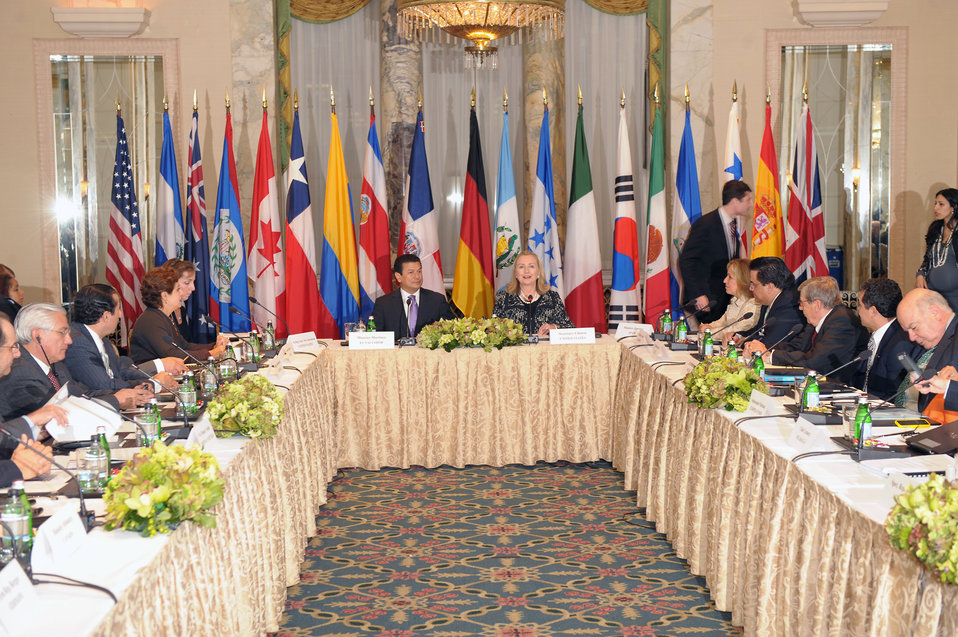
Secretary Clinton Participates in a Meeting of Friends of Central America

U.S. Secretary of State Hillary Rodham Clinton participates in a meeting of Friends of Central America at the Waldorf Astoria in New York, New York, on September 23, 2011.